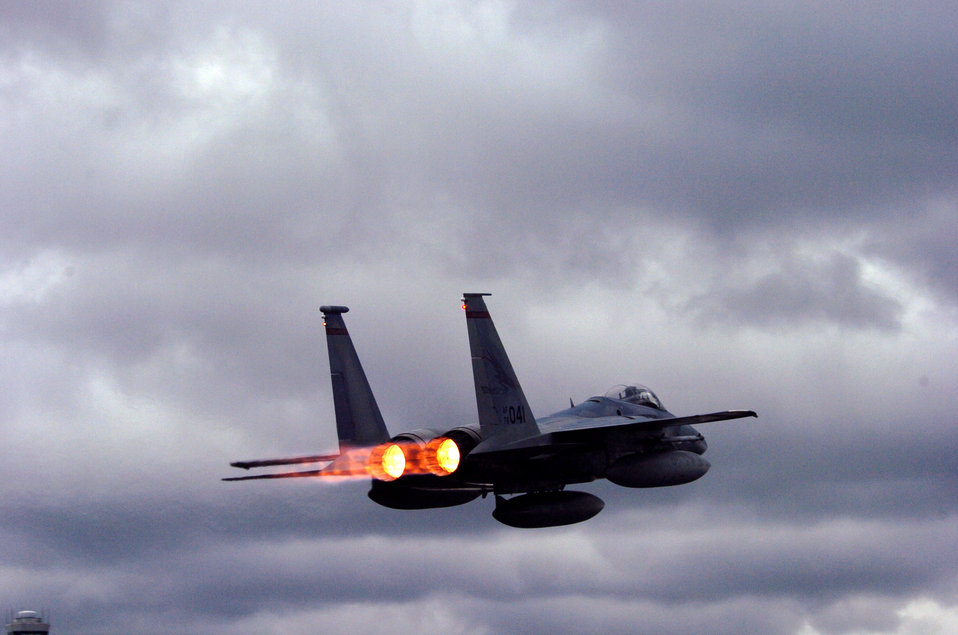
Eagles in Oregon

An F-15 Eagle from the 142nd Fighter Wing takes off from Portland Air National Guard Base in Oregon during an operational readiness inspection on Wednesday, June 14.